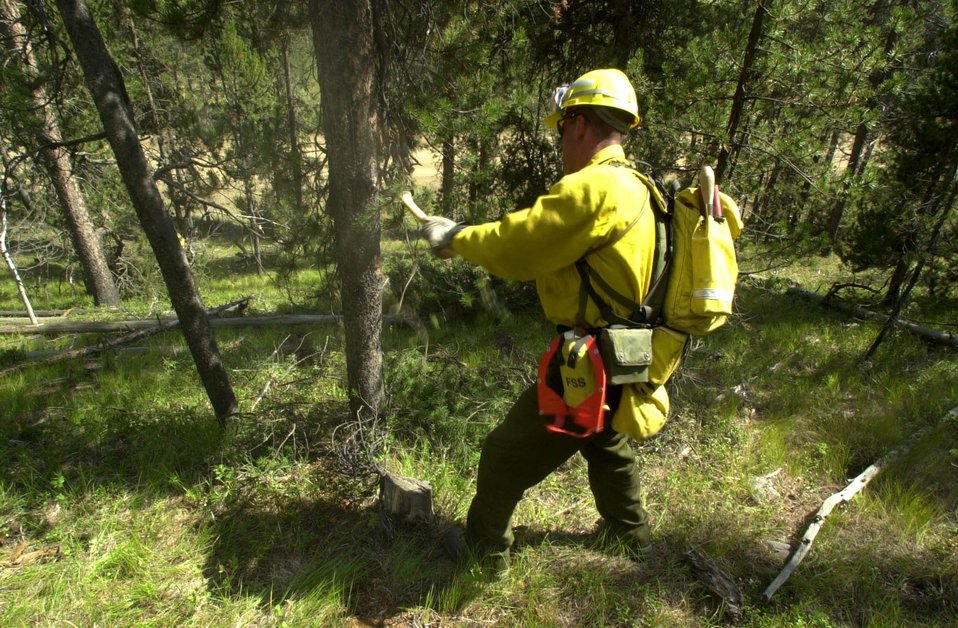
Marine clearing a road Fire Clearwater Fire Salmon Field Office USRD Upper Snake River District